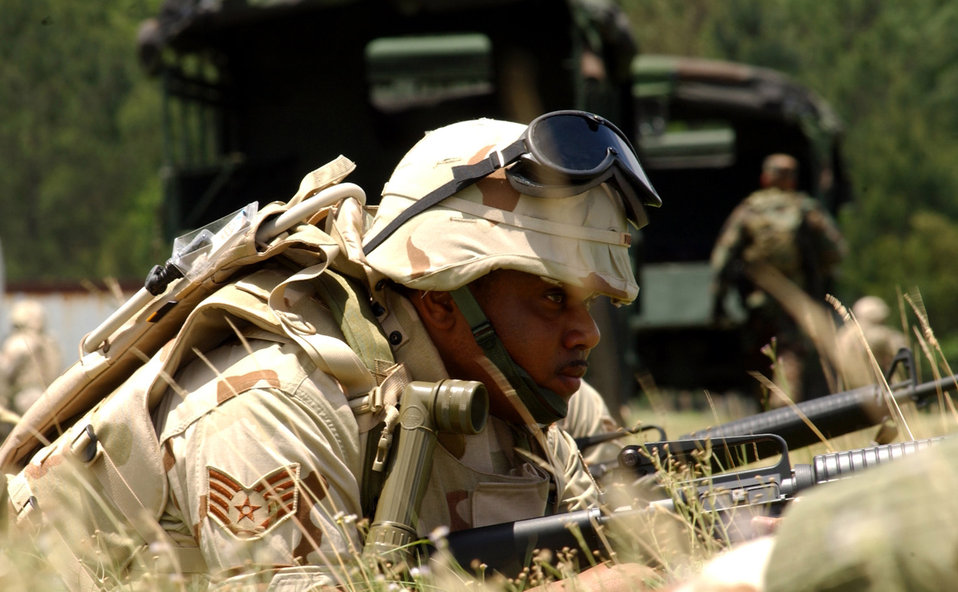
Defensive measures

JACKSONVILLE, Fla. -- An Airman here with the Florida Air National Guard's 125th Fighter Wing civil engineer squadron gets into a defensive position while participating in convoy defense training.